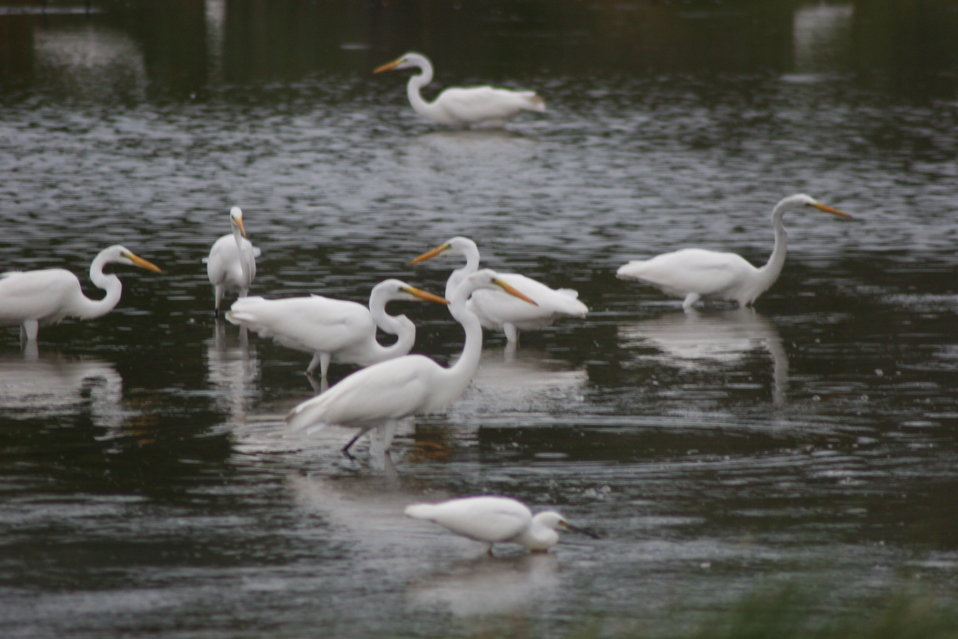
Egrets